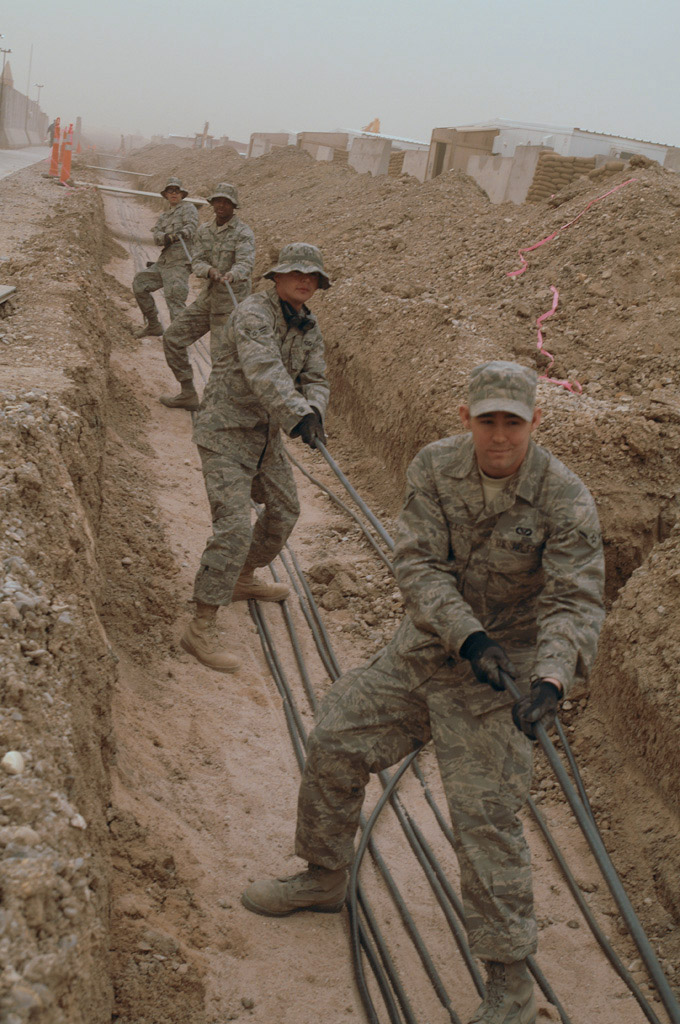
Getting the job done

With visibility limited during a sand storm Jan. 31, Airman Tyler Howells, Airman 1st Class Isaac Barrera, Airman Earnest Freeman and Airman 1st Class Scott Brown, members of the 407th Expeditionary Civil Engineer Squadron at Ali Base, Iraq, pull the slack out of electrical cable they are laying.